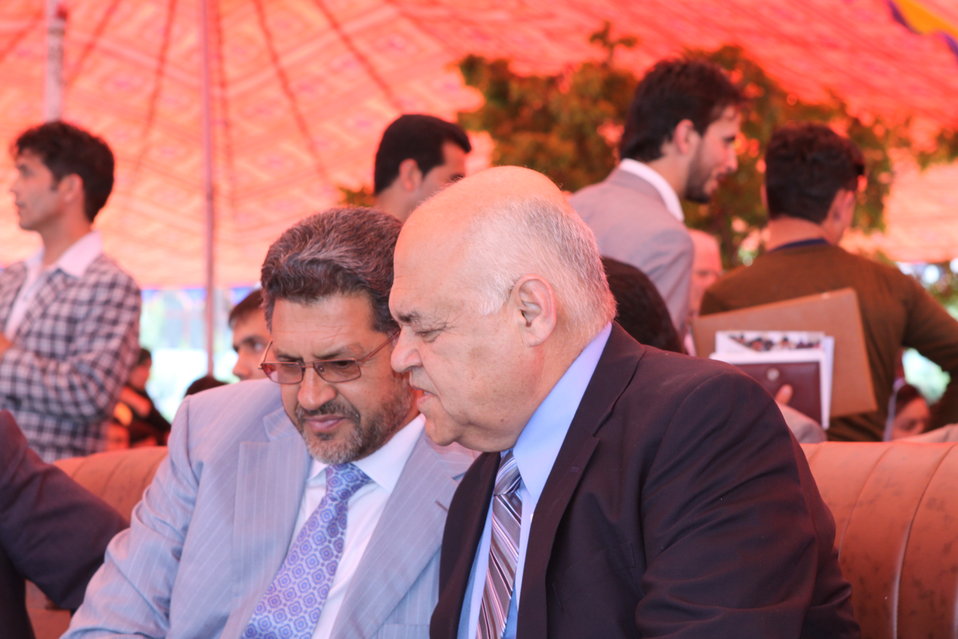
100522 ATVI Graduation 030